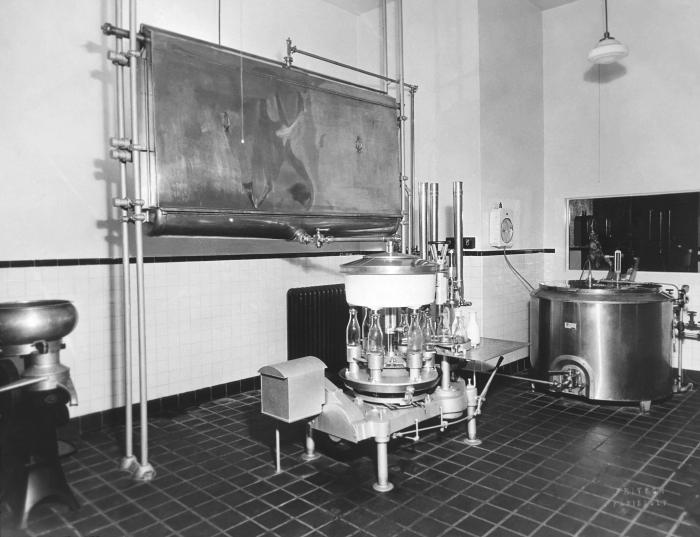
This historic 1933 photograph was taken in a creamery and pasteurization plant located in Faribault, Minnesota. The capacity of the pasteurizer was 150 gallons. Pasteurization of milk is a process that includes having the milk heated, which is important in eliminating harmful bacteria before its distribution to the public.